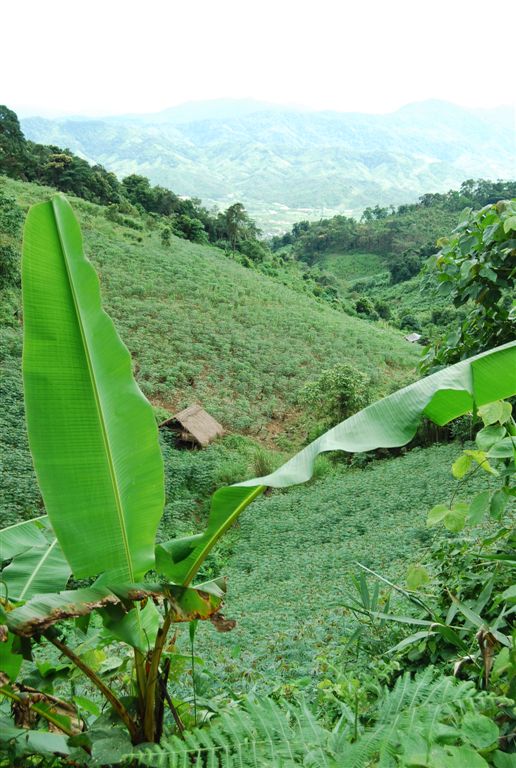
Kon Tum Province landscape